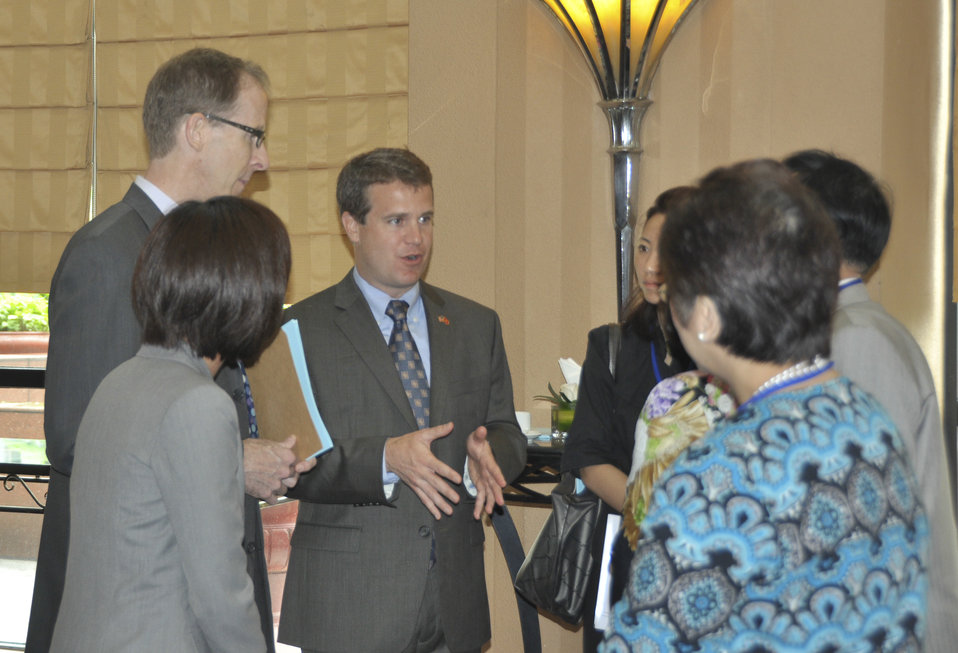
Acting Senior Deputy Assistant Administrator for Asia Jason Foley of USAID (center) talks to Ms. Phan Thi My Linh, Vice Minister of Vietnam’s Ministry of Construction.

Hanoi, May 6, 2014.